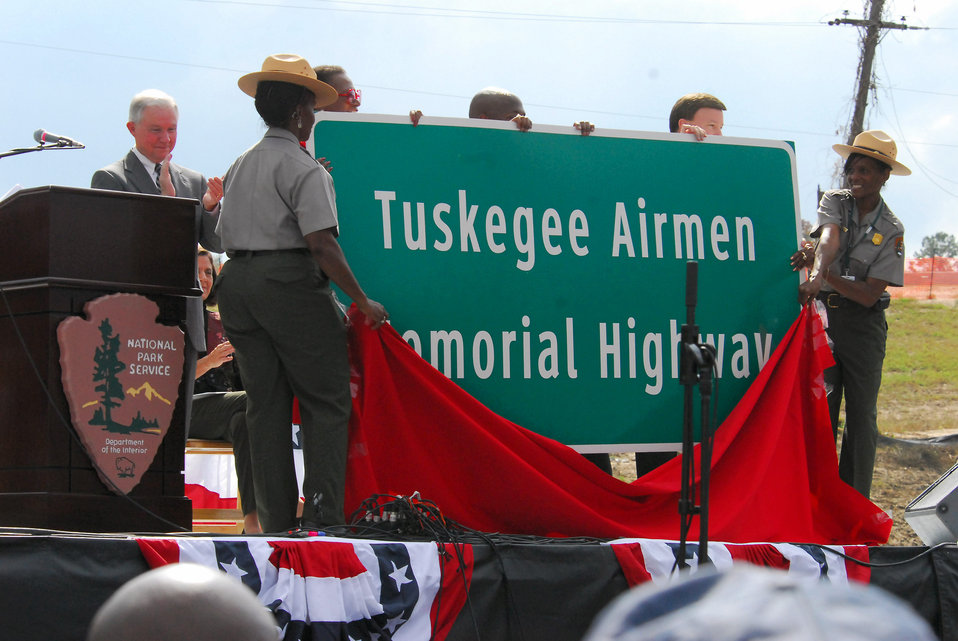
Historic homecoming for Tuskegee Airmen as site opens

As part of the opening ceremony of the Tuskegee Airmen National Historic Site Oct. 10 at Moton Field, Ala., National Park Service officials unveil a sign that designates part of Interstate 85, which passes near the city of Tuskegee, as the Tuskegee Airmen Memorial Highway. Sen. Jeff Sessions of Alabama looks on from behind.